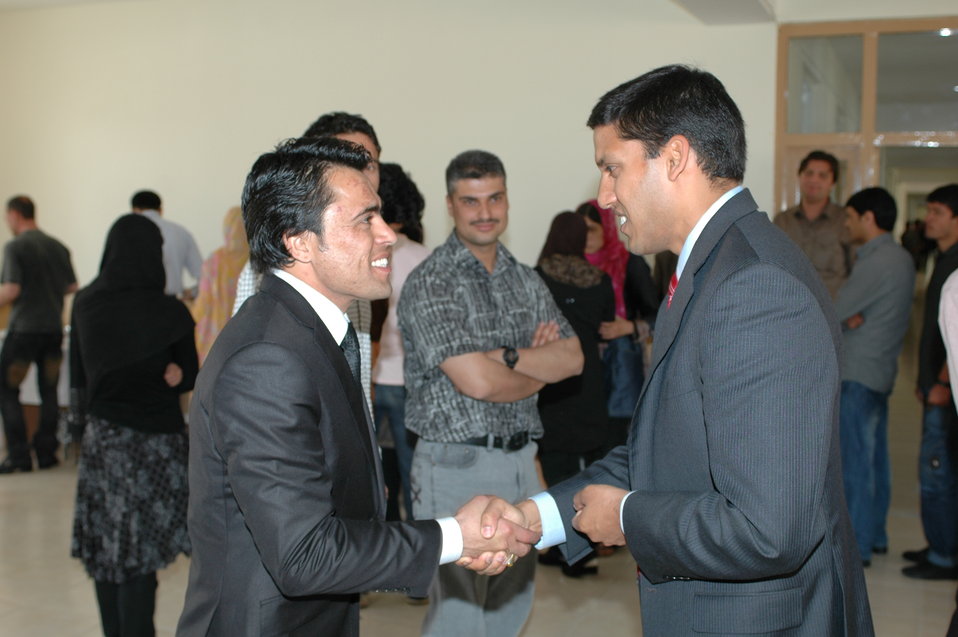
Dr Shah Visits Votech in Kabul